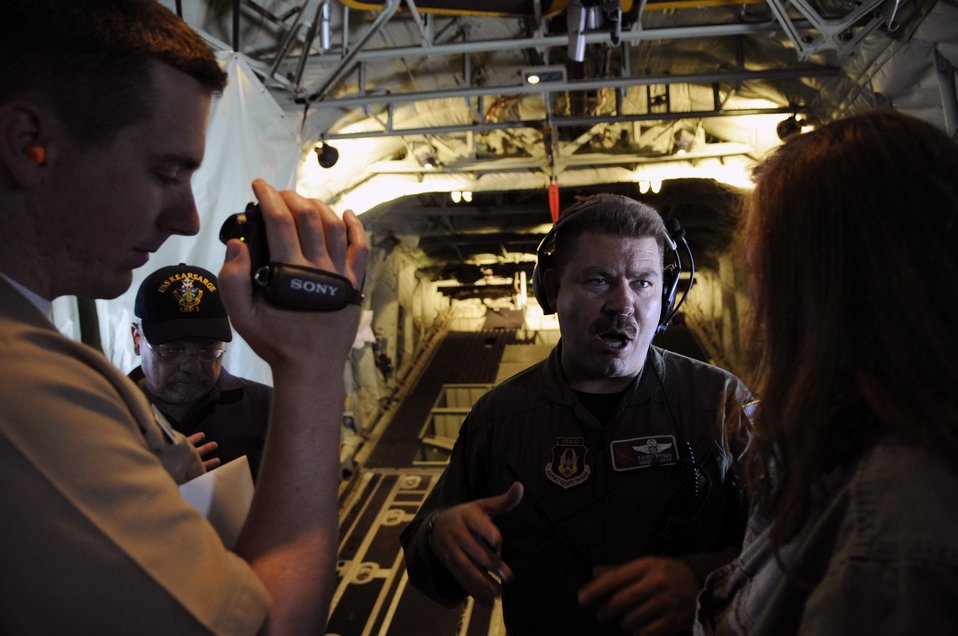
Bloggers Flight with the Hurricane Hunters

Master Sgt. Randy Bynon answers questions from military bloggers onboard a WC-130J